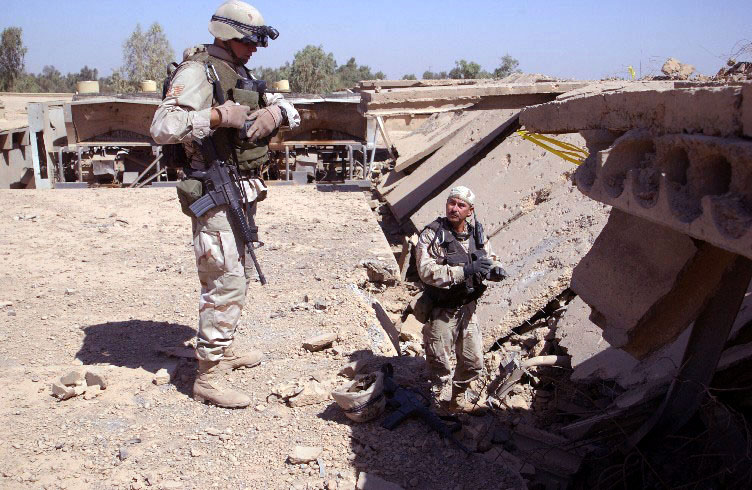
CWEAT in the house

BAGHDAD, Iraq -- Staff Sgt. Tony Newbern (left) and Master Sgt. Eddy Dominguez find unexploded ordnance imbedded in the roof of a building. Despite the presence of the ordnance at the assessment site, Combined Weapons Effectiveness Assessment Team members continued their evaluation. Newbern and Dominguez are explosive ordnance disposal specialists deployed to Iraq from Charleston Air Force Base, S.C.